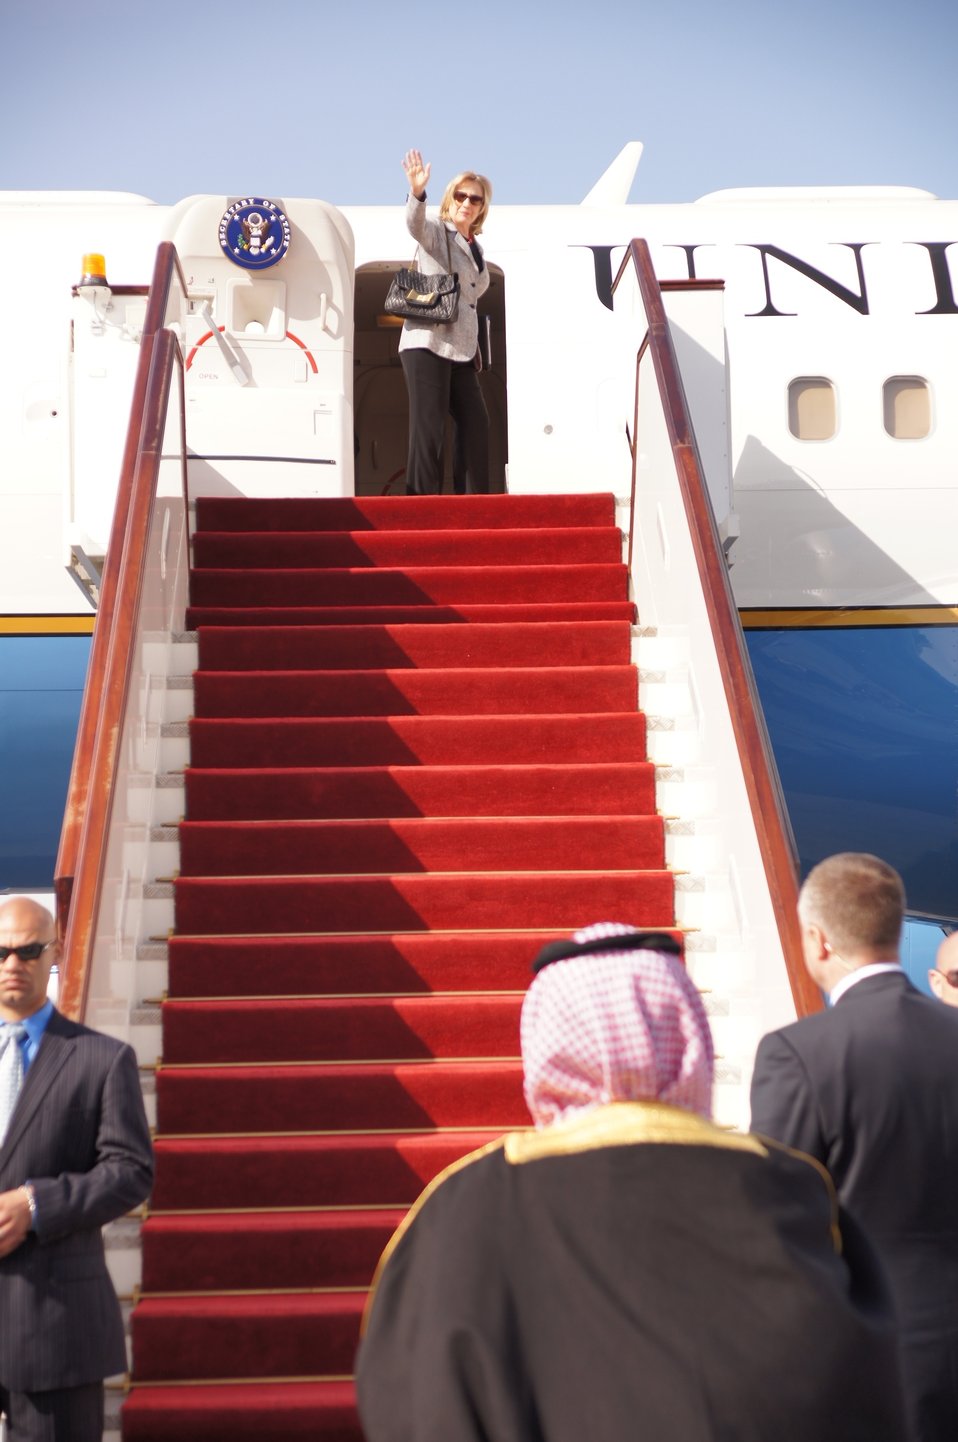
Secretary Clinton Bids Farewell to Qatar

U.S. Secretary of State Hillary Rodham Clinton waves goodbye as she departs from Doha, Qatar, on January 13, 2011.